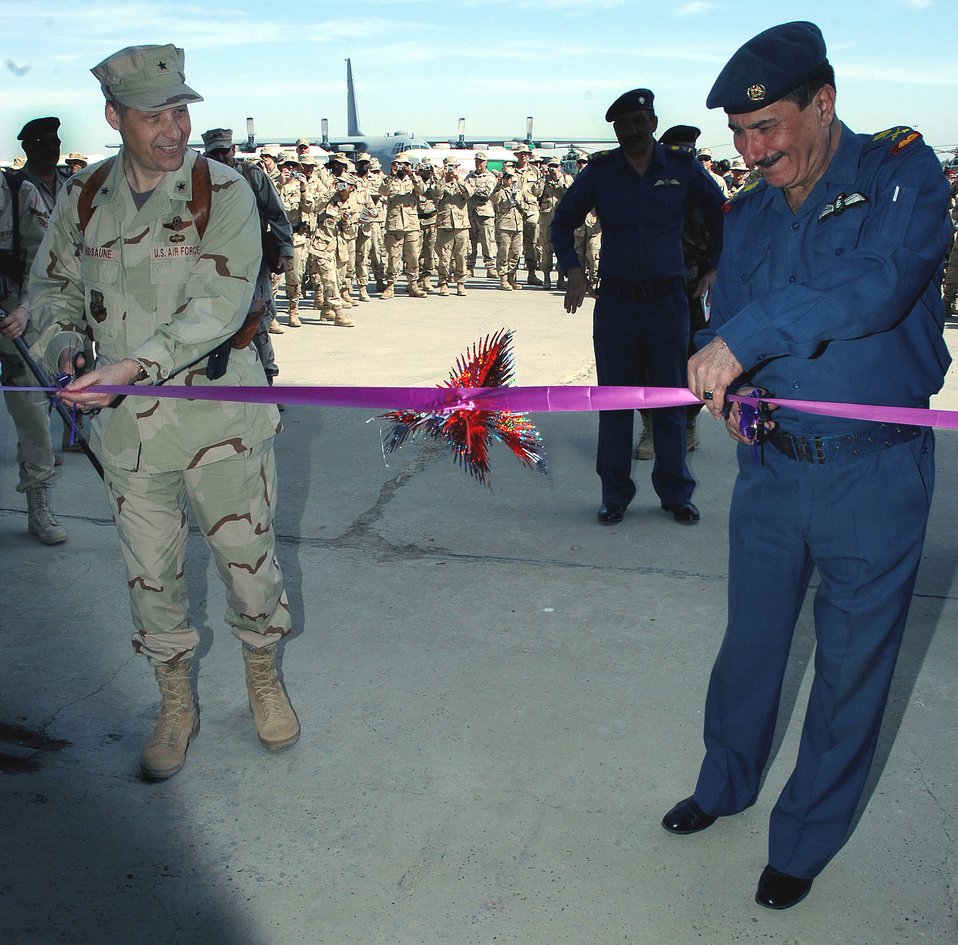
Iraqi Air Force history

Brig. Gen. David Eidsaune and Maj. Gen. Kamal Barzanjy cut the ribbon at a formal ceremony opening New Al Muthana Air Base, Iraq, Tuesday, March 7, 2006. The event culminated more than a year of training by U.S. Airmen with the Multinational Security Transition Command Coalition Air Force Transition Team. This is the first post-Saddam Hussein era Iraqi Air Force base and squadron. General Eidsaune is the director Air Component Coordination Element, Multinational Forces-Iraq. General Barzanjy is the Iraqi Air Force chief of staff.